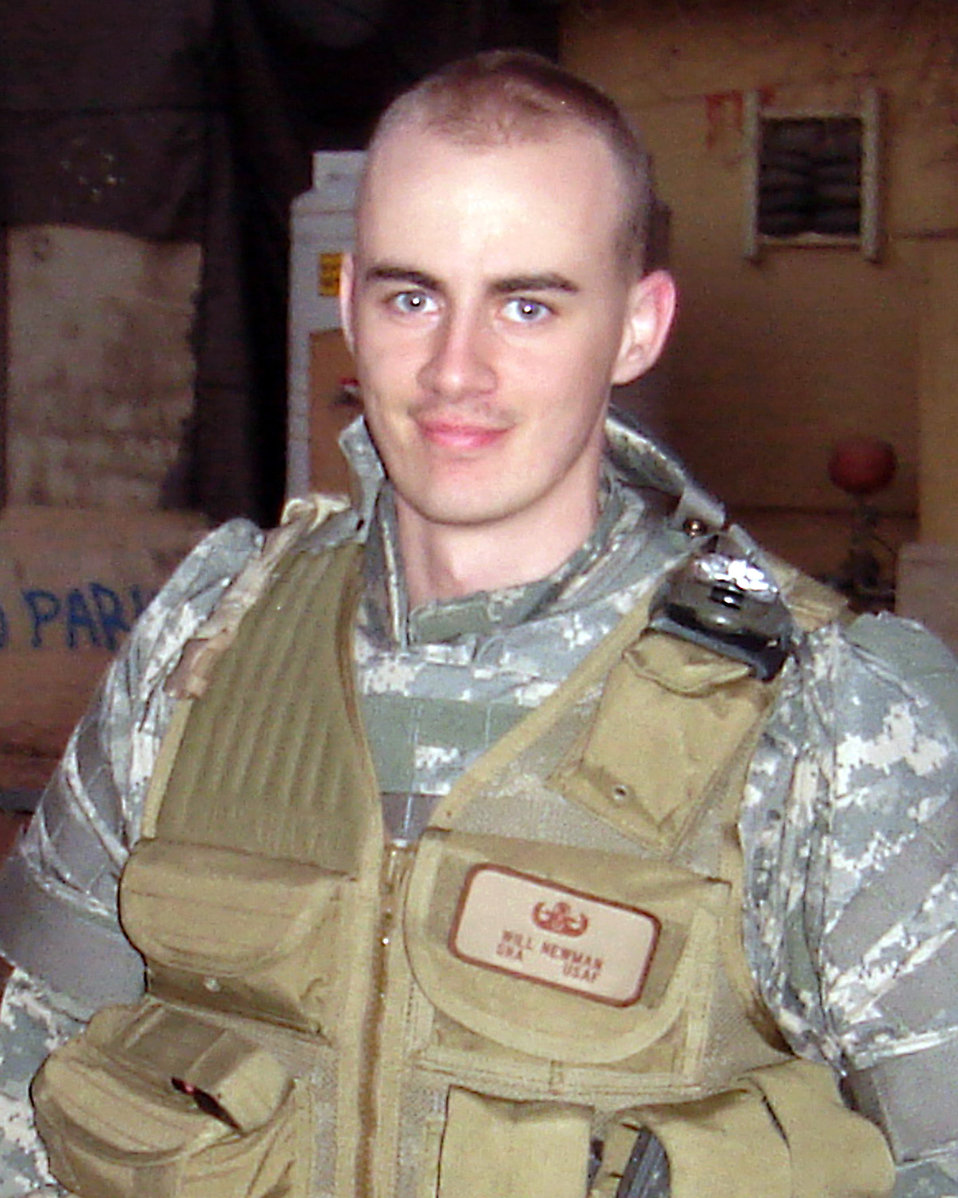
Balad honors fallen EOD Airman

Senior Airman William N. Newman, an explosive ordnance disposal technician, is shown in an undated photo at Balad Air Base, Iraq. Airman Newman, 23, assigned to the 332nd Expeditionary Civil Engineer Squadron, was killed June 7 by an improvised explosive device, which detonated while he was supporting Army and Iraqi security forces south of the base.